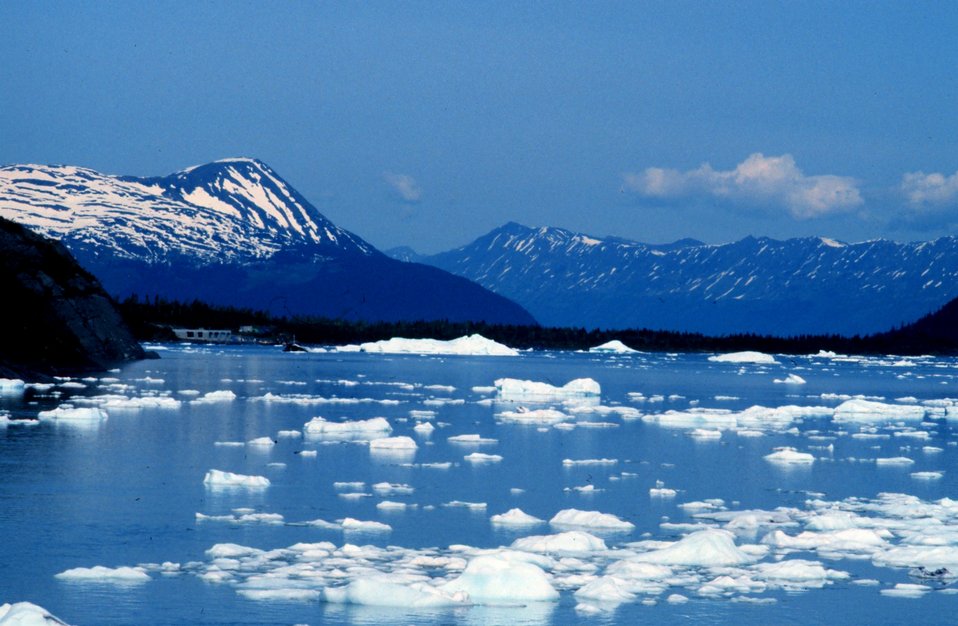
Small icebergs in Seward area